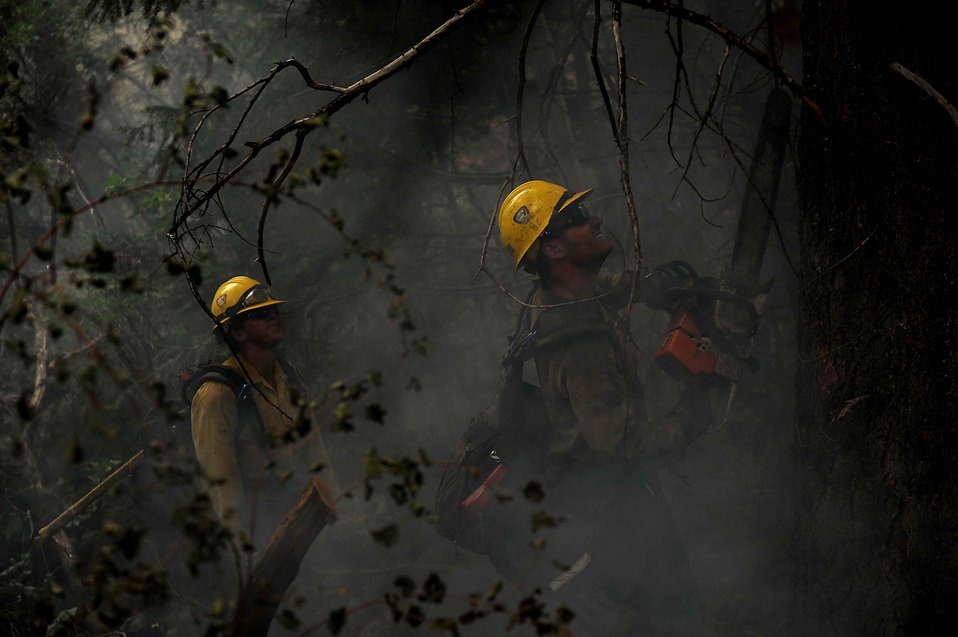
Fuel stop

Brad Mabery downs a tree with a chainsaw with the help of Marissa Halbeisen while cutting and clearing a fire line in the Mount Saint Francois area of Colorado Springs, Colo., June 28, 2012, Mabery and Halbeisen, both firefighters with the Vandenberg Air Force Base, Calif., Hot Shots, are helping to battle several fires in Waldo Canyon.